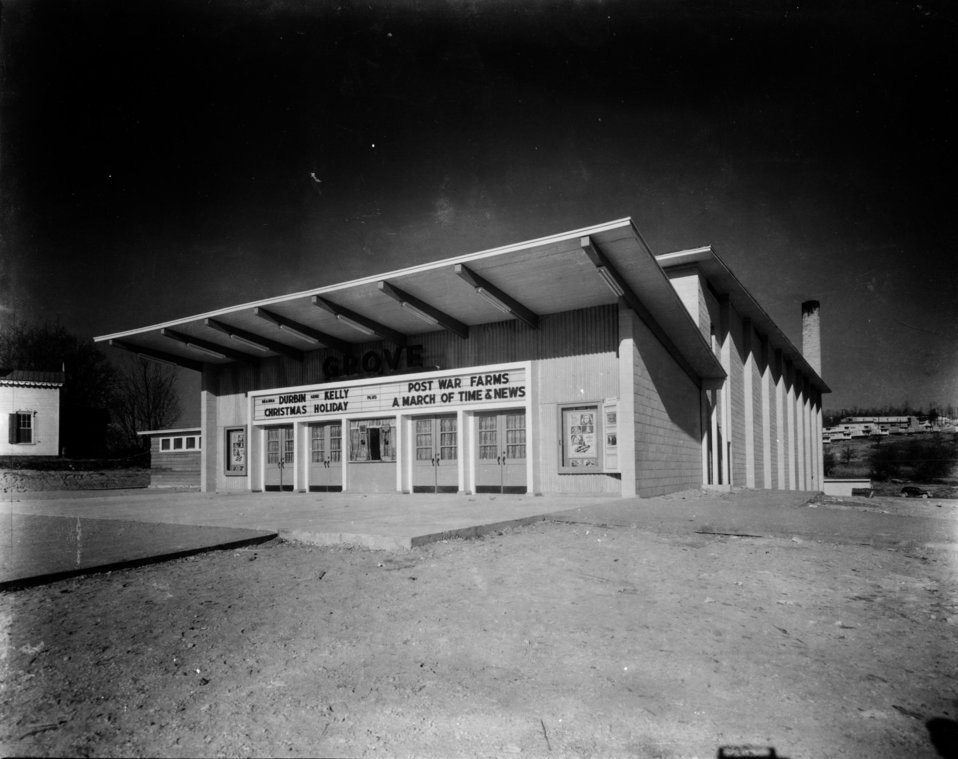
Business activity at Oak Ridge